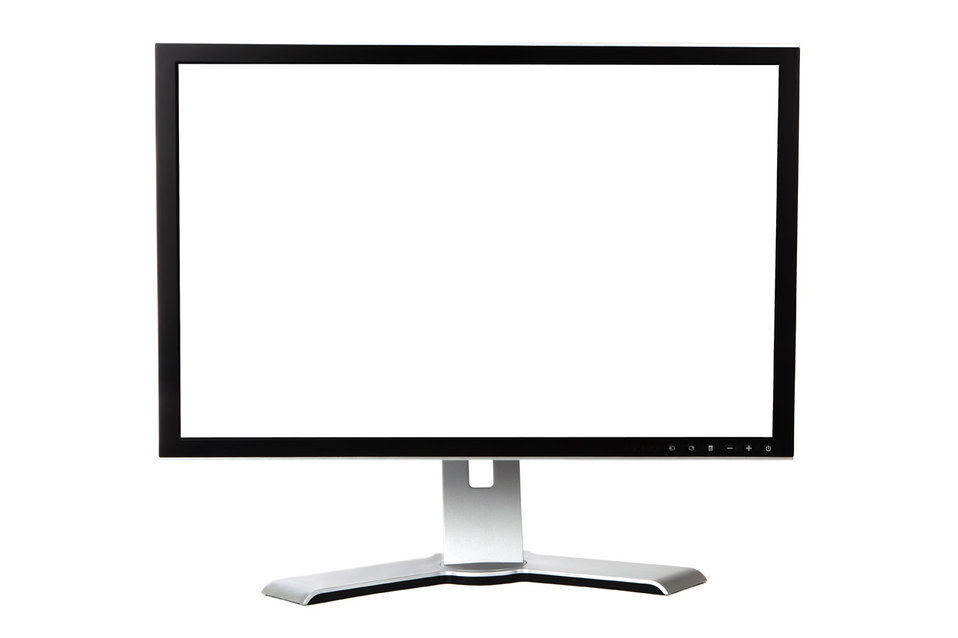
Blank monitor

Computer monitor isolated on white background with white screen ready for your text, illustrations or pictures.